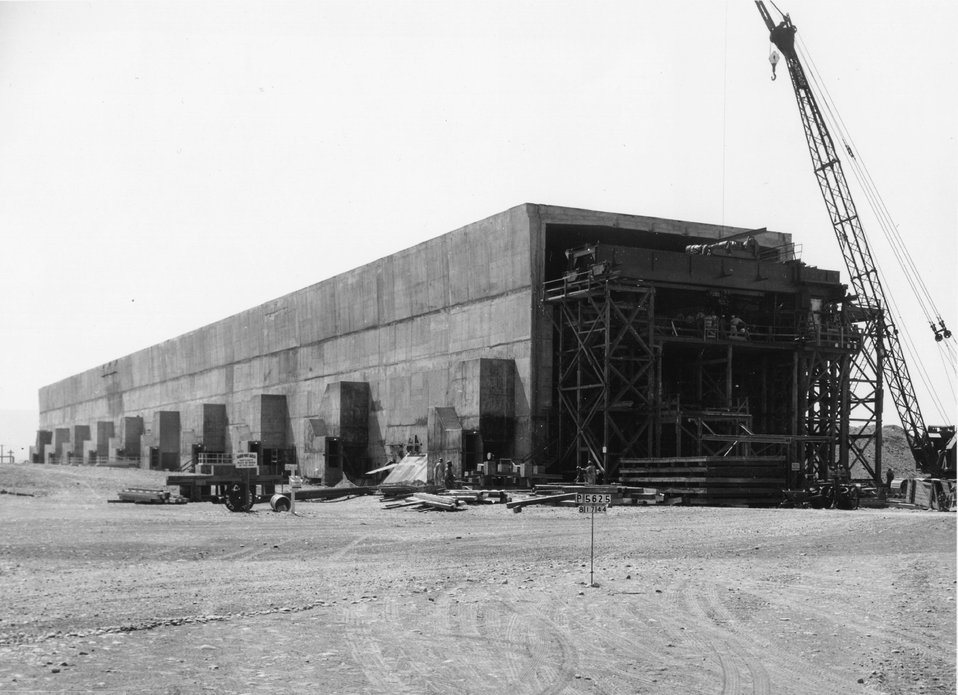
T Plant - world's first large-scale plutonium separation facility. The chemical separation buildings, nicknamed 'Queen Marys' because of their size and shape, are massive canyon-like structures, 800 feet long, and 80 feet high. c. undated